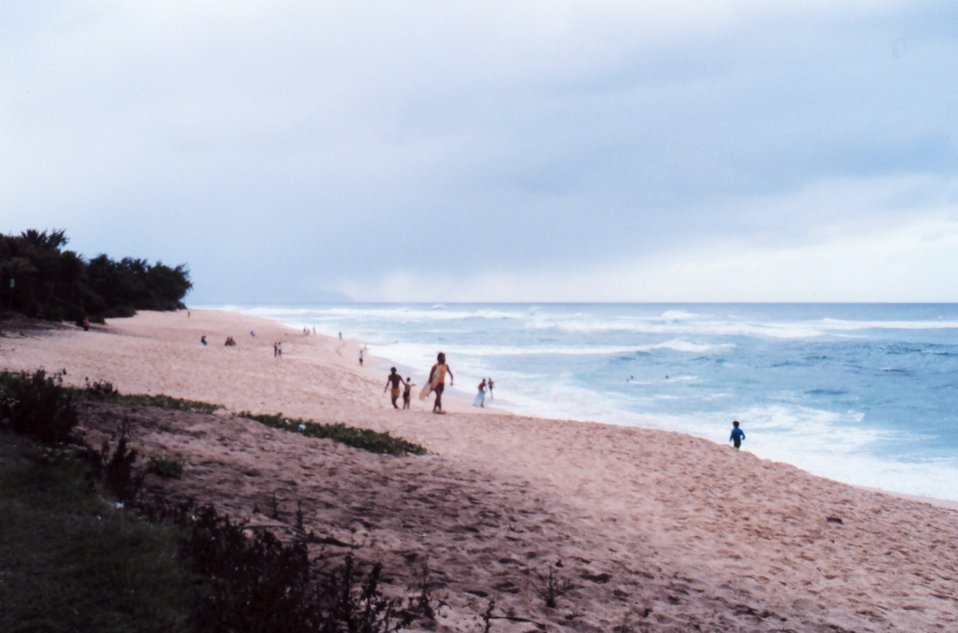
North shore surfing beach